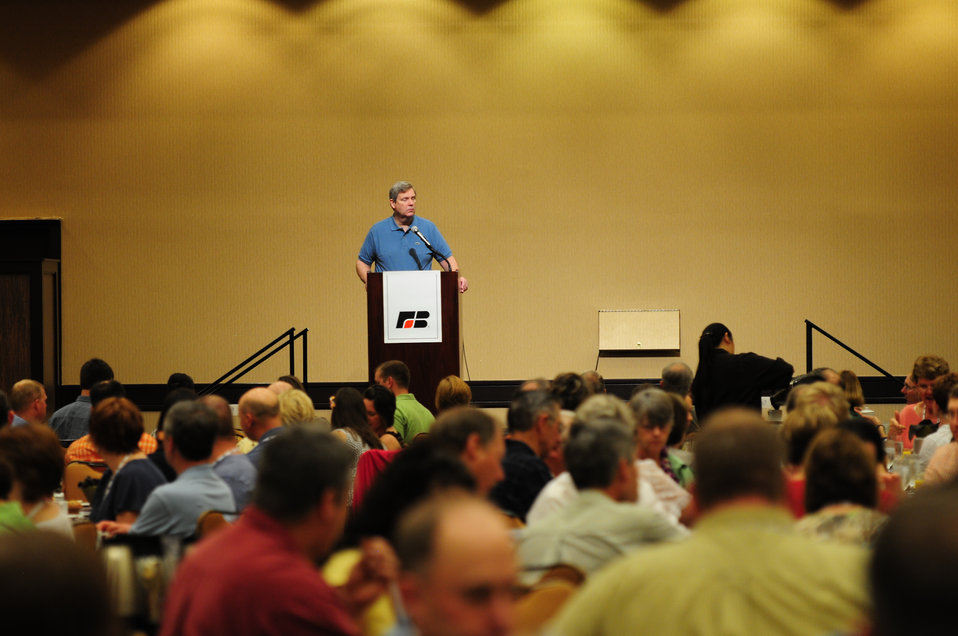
Agriculture Secretary Tom Vilsack speaks at the Iowa Farm Bureau event at the Sheridan Waikiki, in Honolulu, Hawaii, on Sunday, January 8, 2012.